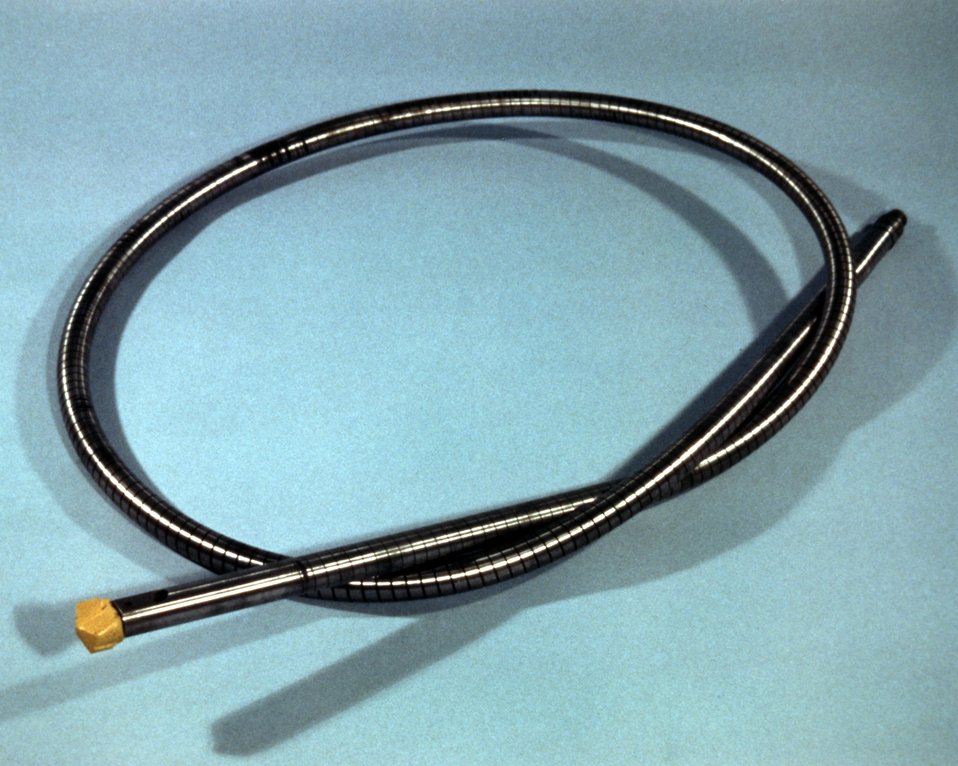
FLEXIBLE DRILL COMPONENT, COILED.

THE PREDOMINANT UNDERGROUND MINING METHOD IN THE U.S. IS THE 'ROOM AND PILLAR' METHOD, A TERM DERIVED FROM THE MINING PATTERN OF A SERIES OF EXCAVATED AREAS (ROOMS) AND UN EXCAVATE AREAS (PILLARS) WHICH ARE LEFT TO SUPPORT THE ROOF. A MAJOR INCREASE IN PRODUCTION AND EFFICIENCY COULD BE ACHIEVED BY INTEGRATING THE ROOF SUPPORT AND EXTRACTION FUNCTION.